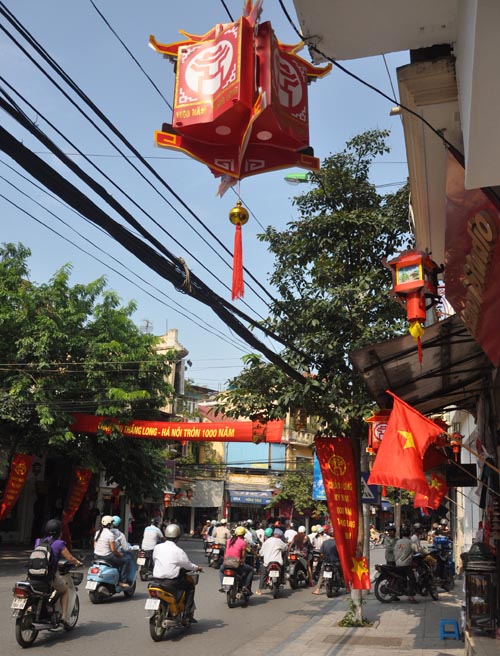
Hanoi comes to life during the 1,000-year millennial celebrations in October 2010.